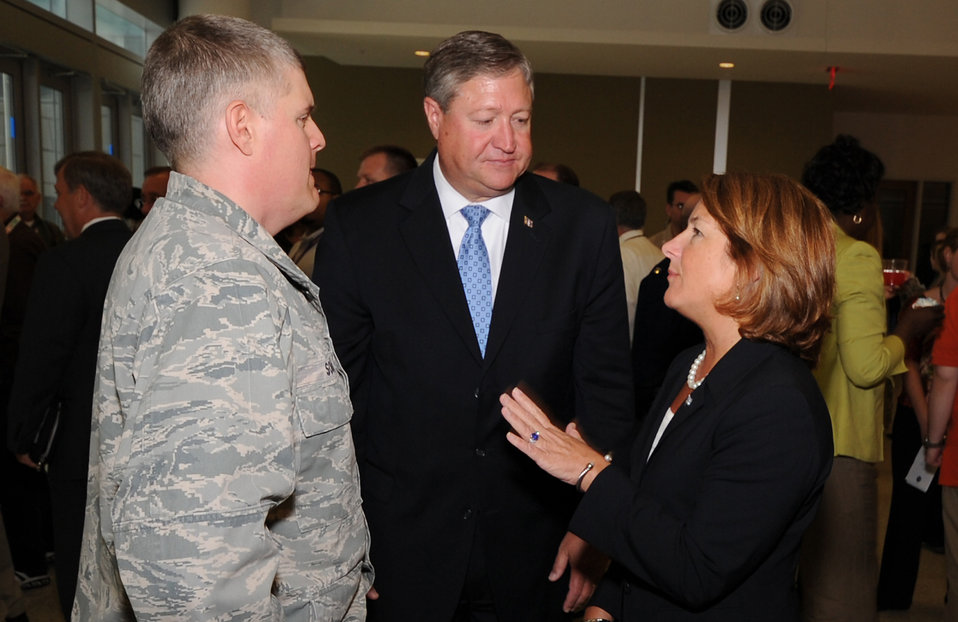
SECAF helps NGA celebrate USAF birthday

Secretary of the Air Force Michael Donley and Letitia A. Long speak to Col. Craig Souza Sept. 16, 2011, during a ceremony that celebrated the Air Force's 64th birthday. Long is the director of the National Geospatial-Intelligence Agency, and Souza is one of the agency’s wounded warriors who was recognized during the birthday ceremony.